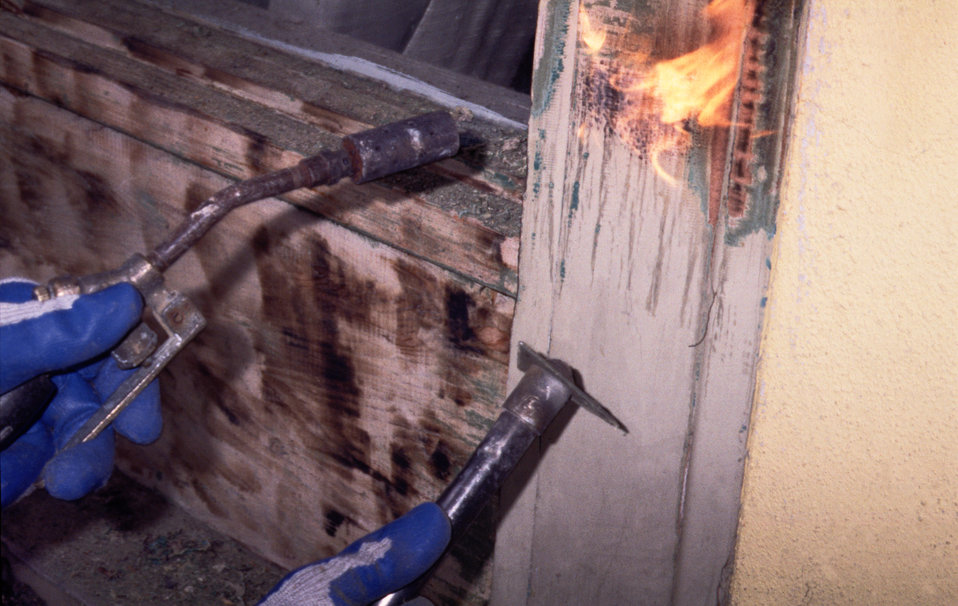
This 1999 photograph shows a worker using flames from a torch to assist in the removal of paint, demonstrating an exterior renovation method typically used on residences where lead-based paint was present. This method was found to contaminate nearby areas with lead.